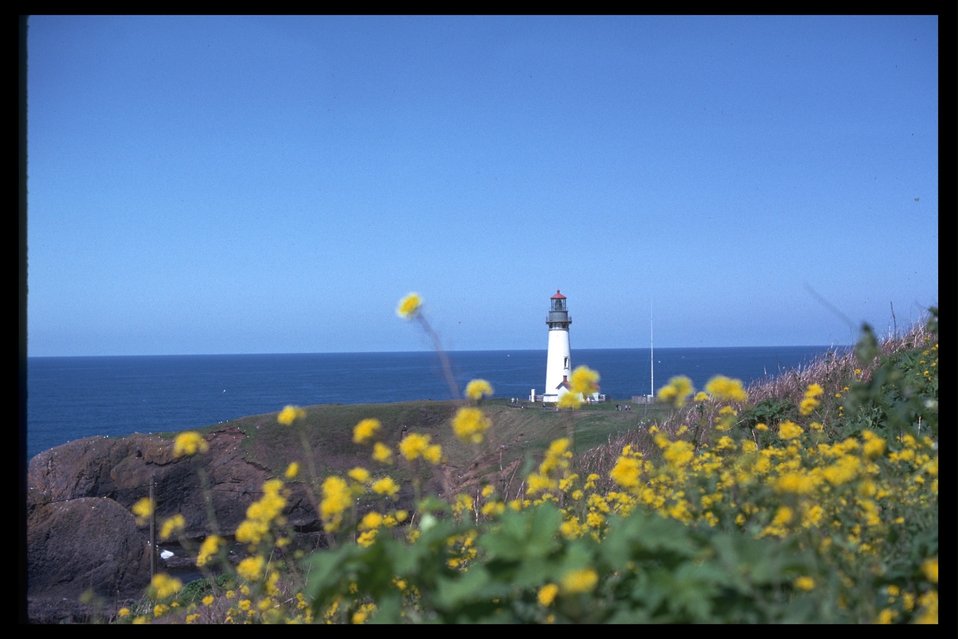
Mustard field near the Yaquina Head Lighthouse.